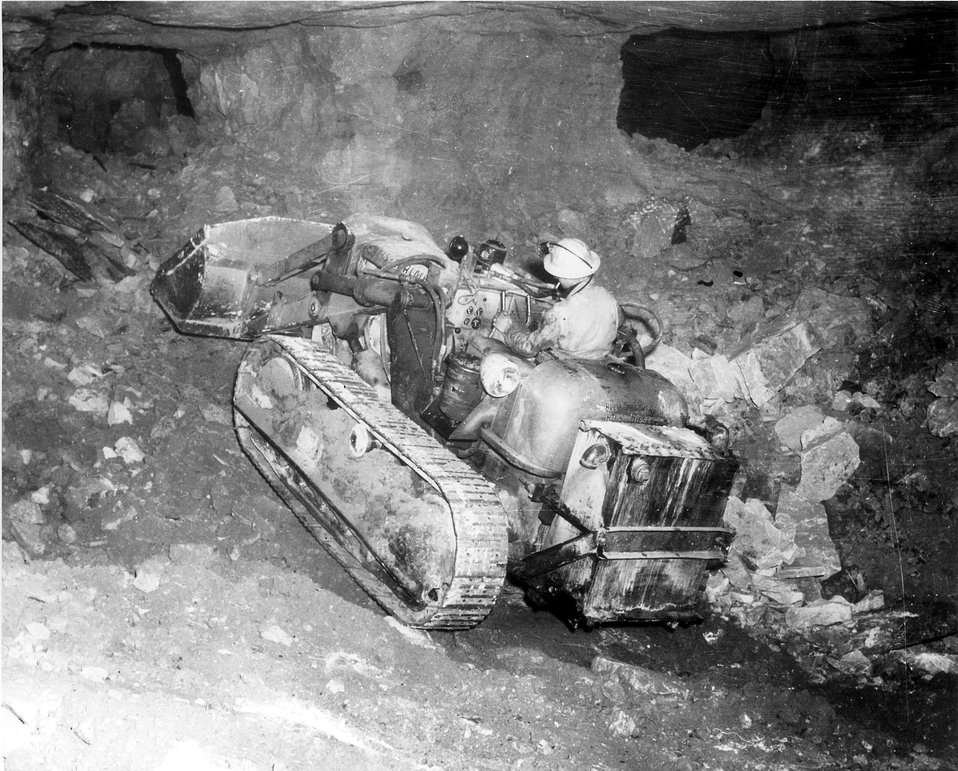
Front end type tractor loader in large open stole of uranium mine. This loader used to load diesel dump trucks underground. c. 1957